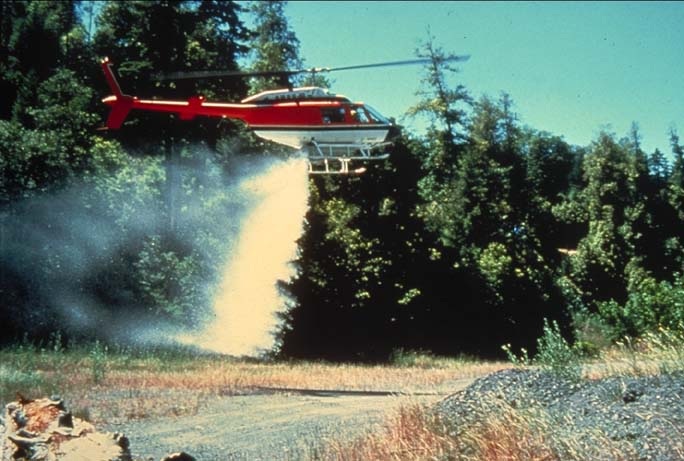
Helicopter with bucket